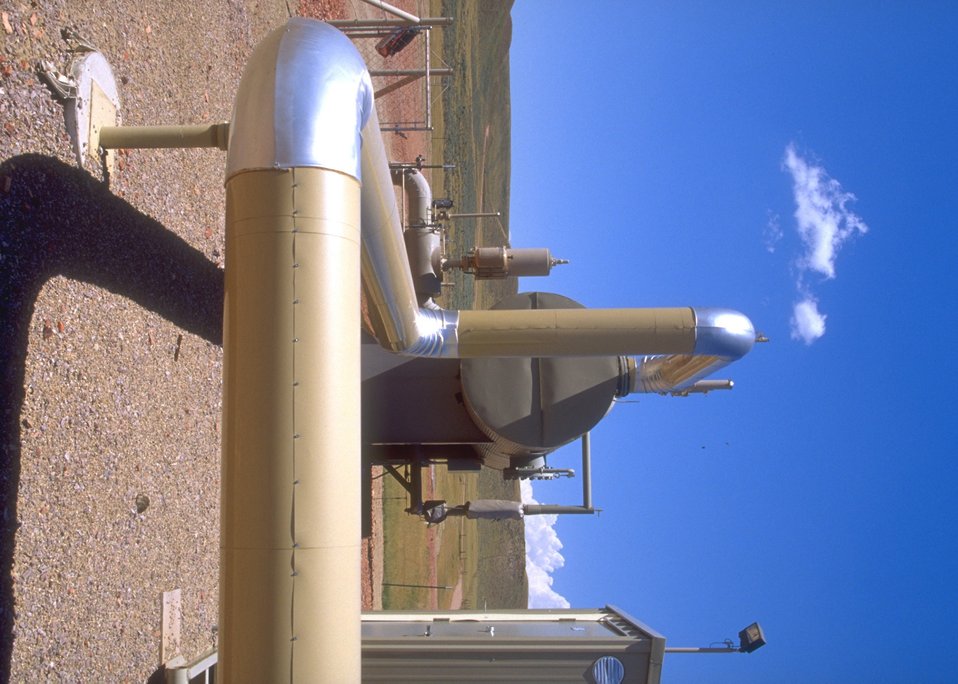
Facilities used in the production of coal bed methane, Buffalo Field Office.